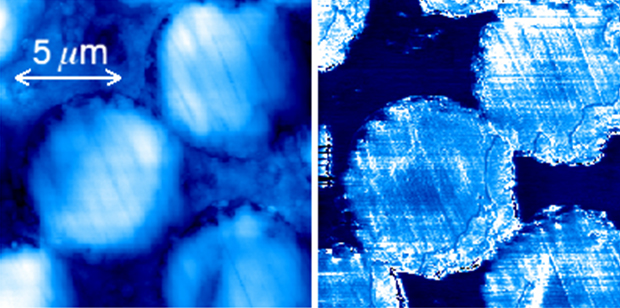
Atomic Force Microscope

An atomic force microscope normally reveals the topography of a composite material (l.) NIST's new apparatus adds software and electronics to map nanomechanical properties (r.) The NIST system reveals that the glass fibers are stiffer than the surrounding polymer matrix but sometimes soften at their cores.